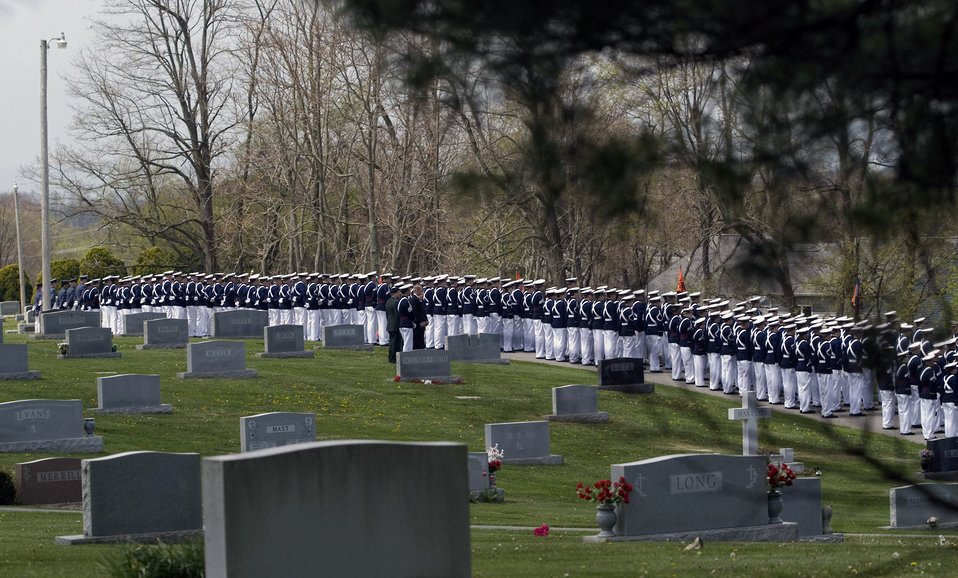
Honoring a Cadet

The regiment of the Virginia Tech Corps of Cadets stands in formation along the hills of the cemetery in Blacksburg, Va., April 25. Cadet Matthew La Porte, a sophomore in Air Force ROTC Detachment 875 and the Virginia Tech Corps of Cadets, was one of the 32 students and faculty killed during the shooting incident at the school April 16.